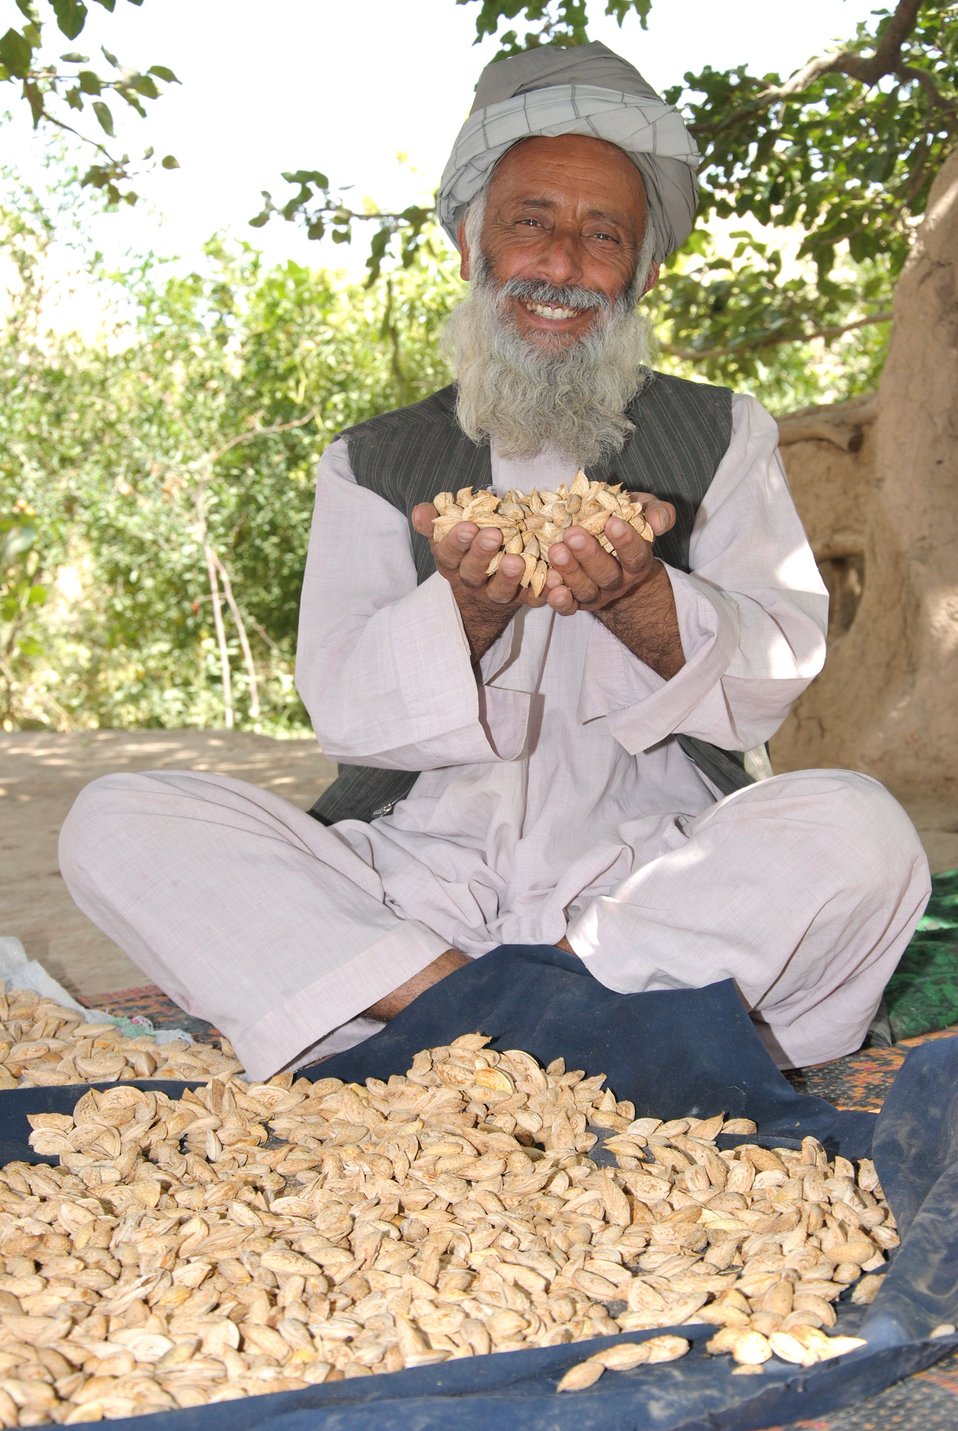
Agricultural Credit Enhancement loan

For the first time, thanks to an Agricultural Credit Enhancement loan, Aminullah is able to buy fertilizer and pesticide for his 12 acres of ancestral land in northern Afghanistan. He reaped a rich harvest, at least 20% more than before. The quality of his produce has also improved, and Aminullah is now able to sell it to an exporter who sells fruits and nuts to India.